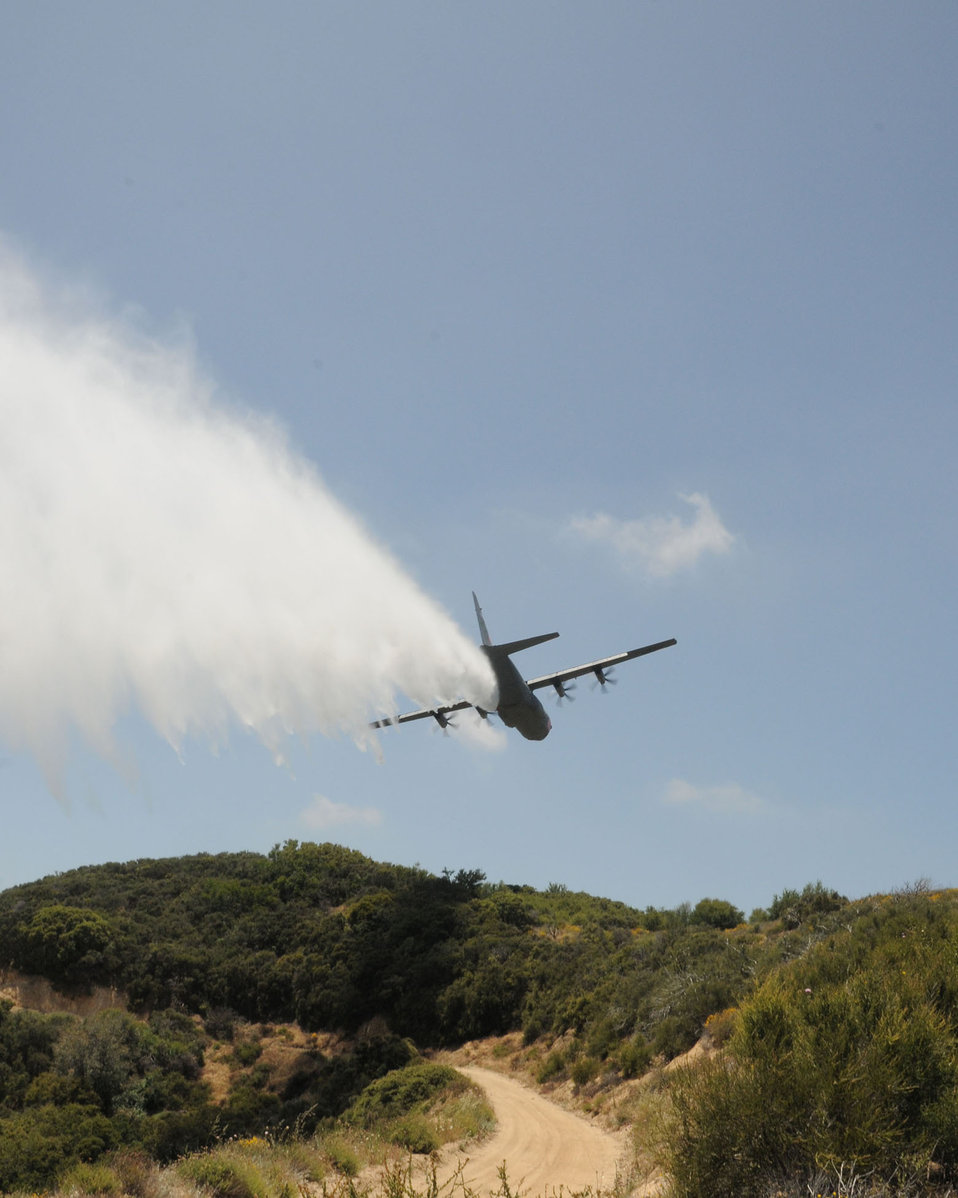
Weapon of another kind

A Modular Airborne Firefighting System-equipped C-130J Super Hercules drops water on the Angeles National Forest, Calif., June 8, 2011, during a training exercise.